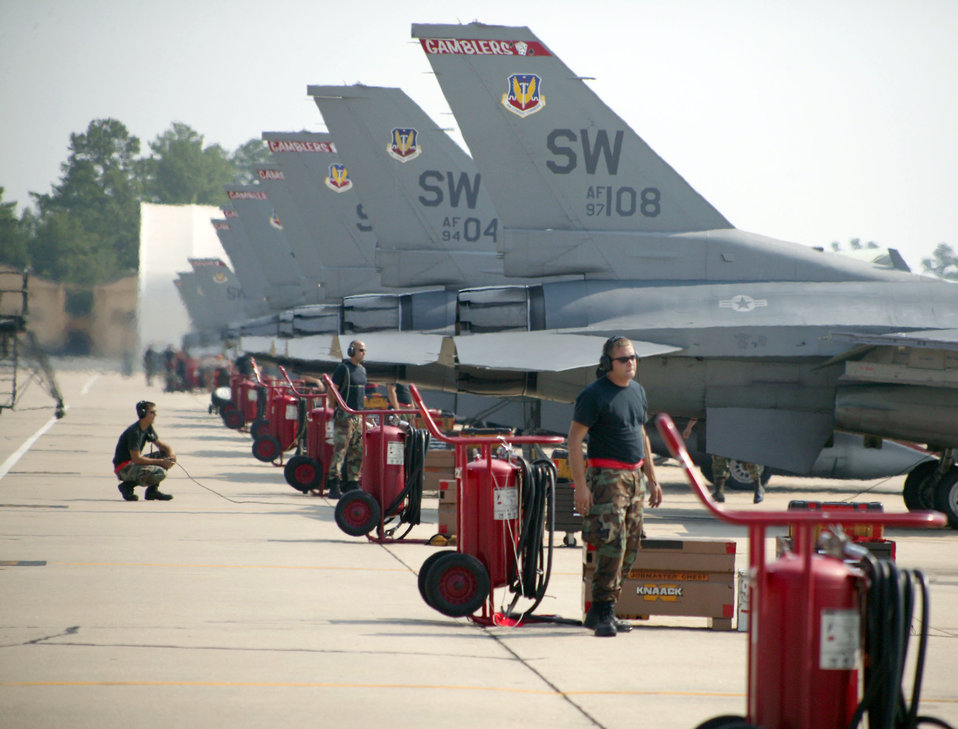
Shaw hosts Operation Iron Thunder

Maintainers from the 77th Aircraft Maintenance Unit prepare F-16 Fighting Falcons at Shaw Air Force Base, S.C., for Operation Iron Thunder on July 18.